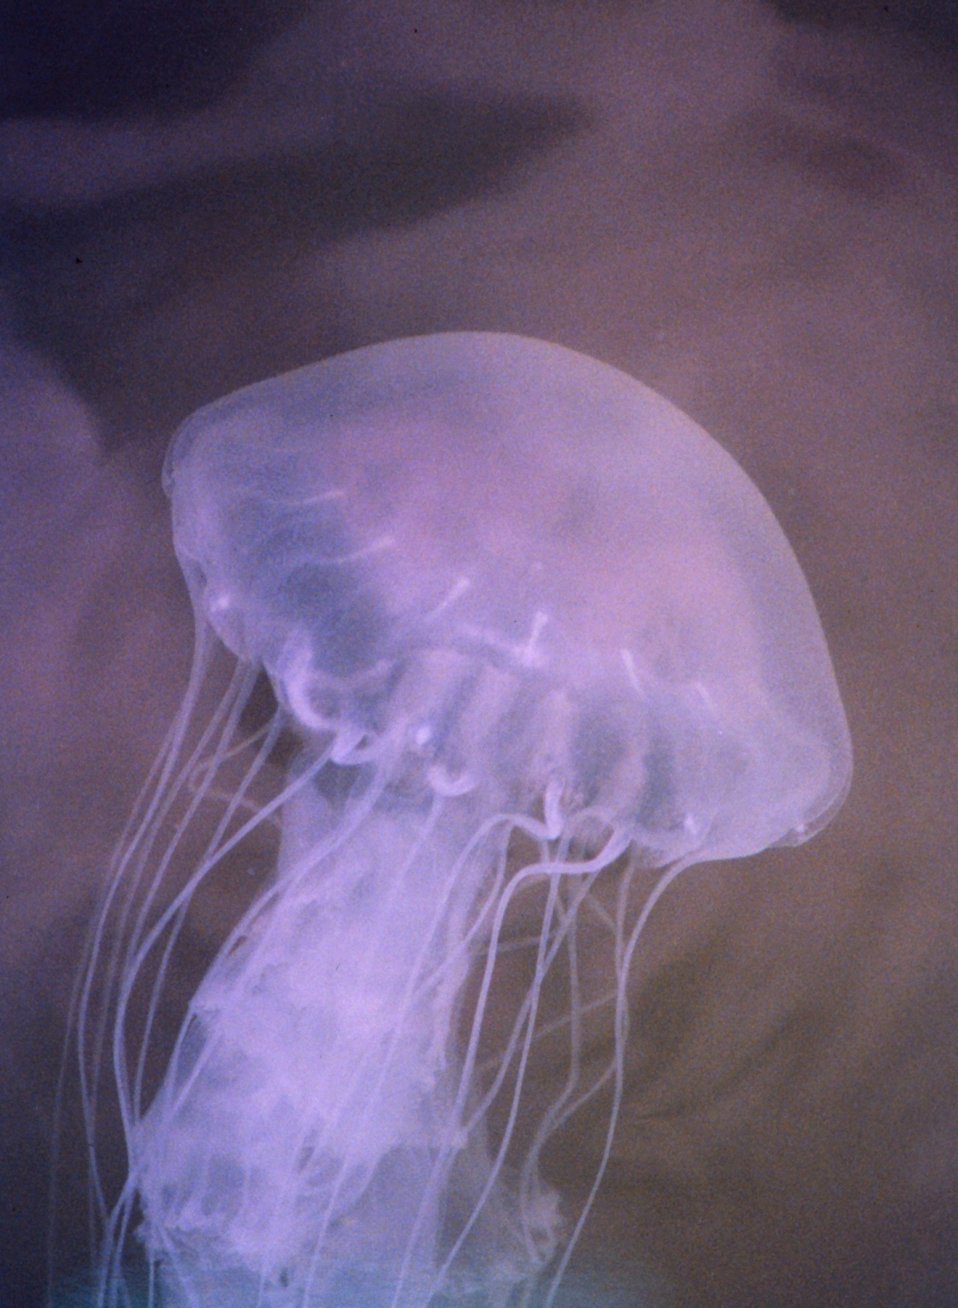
The bane of Chesapeake Bay swimmers, the stinging sea nettle, Chrysaora quiquecirrha.